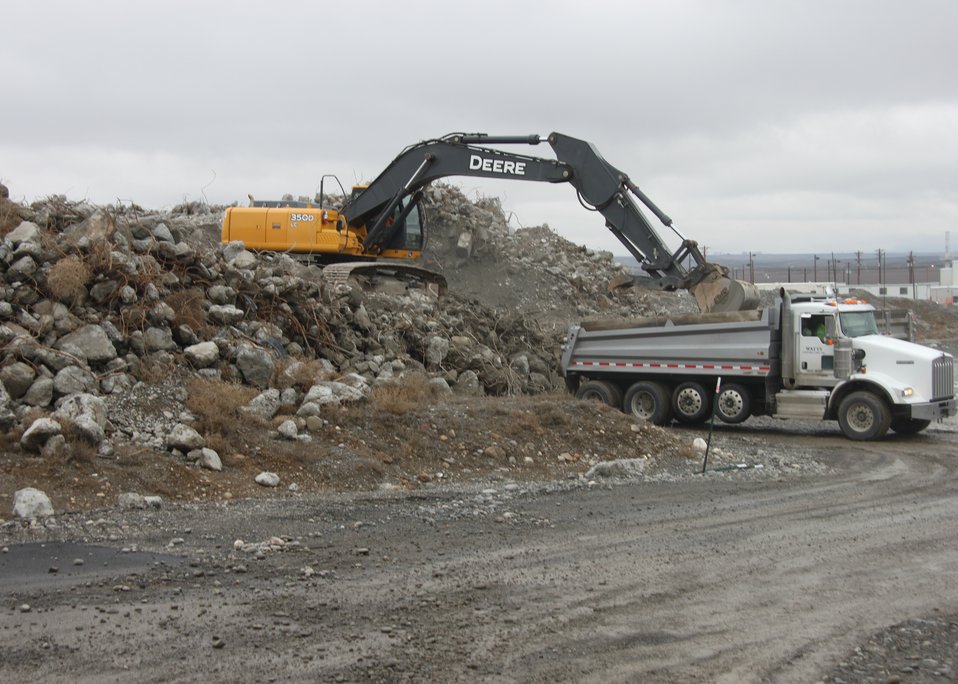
D and D, U Canyon

Recovery Act-funded work at the Hanford site.